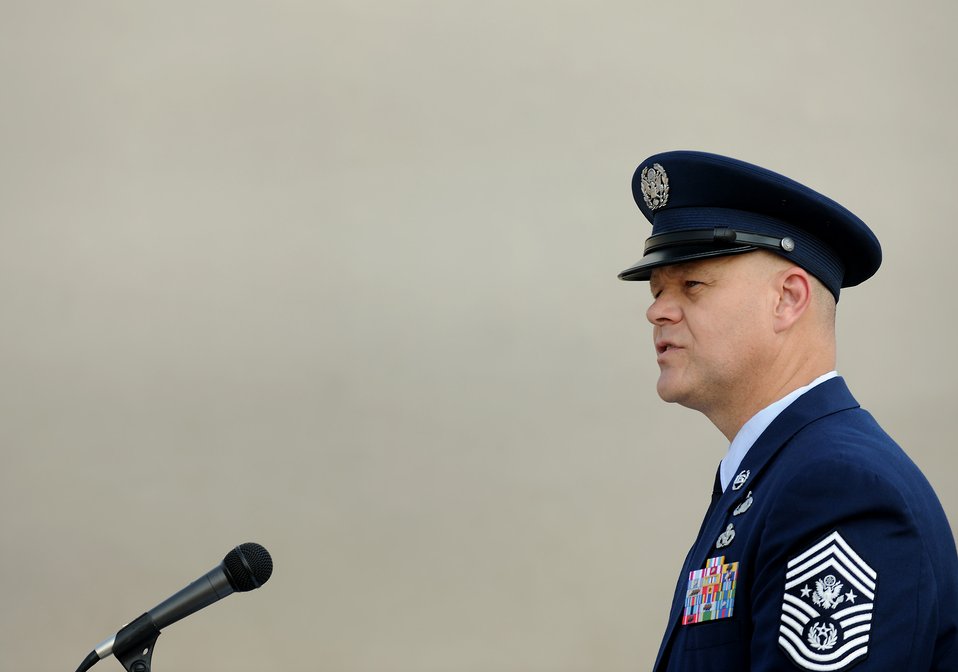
CMSAF Reads Honors Fallen on Memorial Day

Chief Master Sgt. of the Air Force James Roy reads the names of Airmen who were lost in combat in the past year during a Memorial Day ceremony May 30, 2011, at the Air Force Memorial in Arlington, Va. The fallen heroes also were honored by wreaths that were presented by members of several organizations.